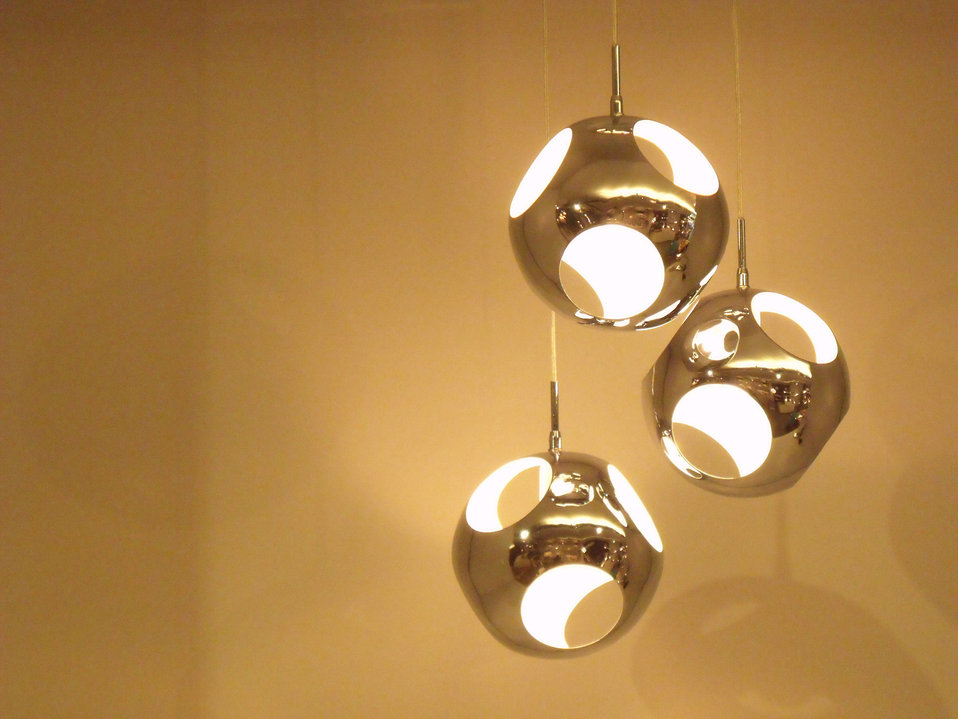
Lamps

Lights in the shape of balls.